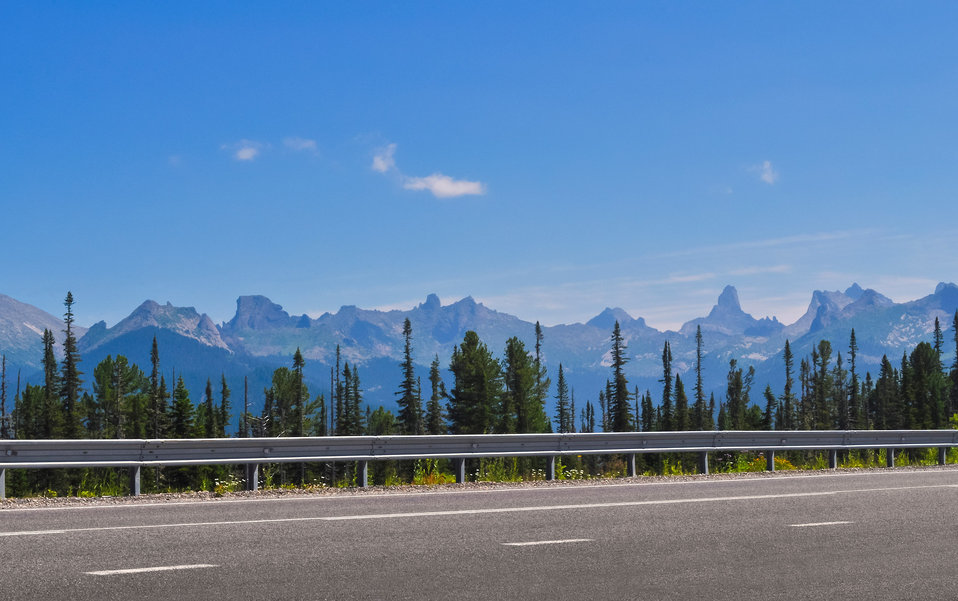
Ergaki

Natural park ergaki in russia.